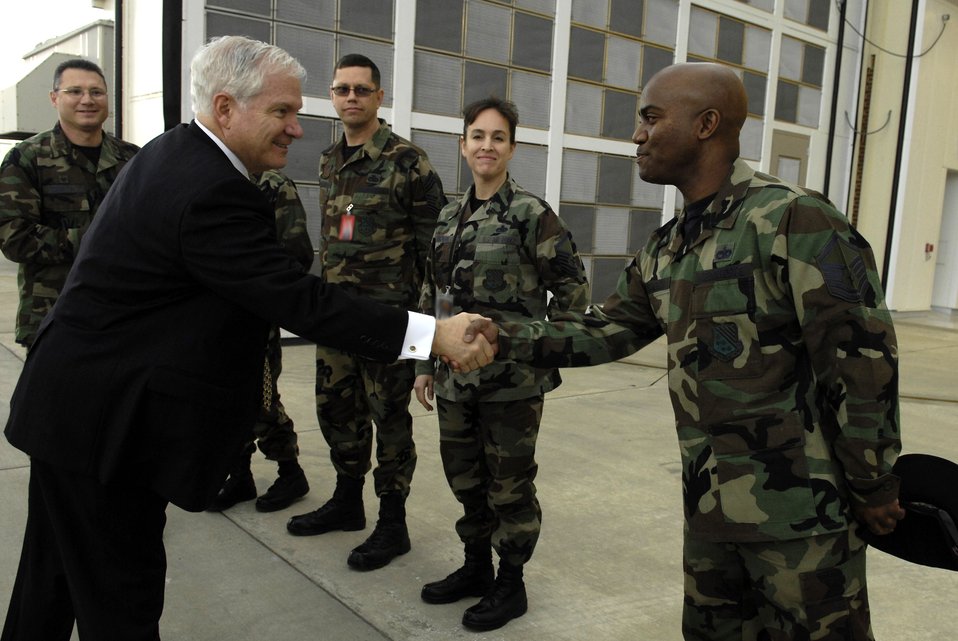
Secretary Gates sends message to all servicemembers

Secretary of Defense Robert M. Gates shakes hands with Master Sgt. Grady Hamilton Feb. 22 during a visit to Langley Air Force Base, Va. Sergeant Hamilton is assigned to the 94th Fighter Squadron.